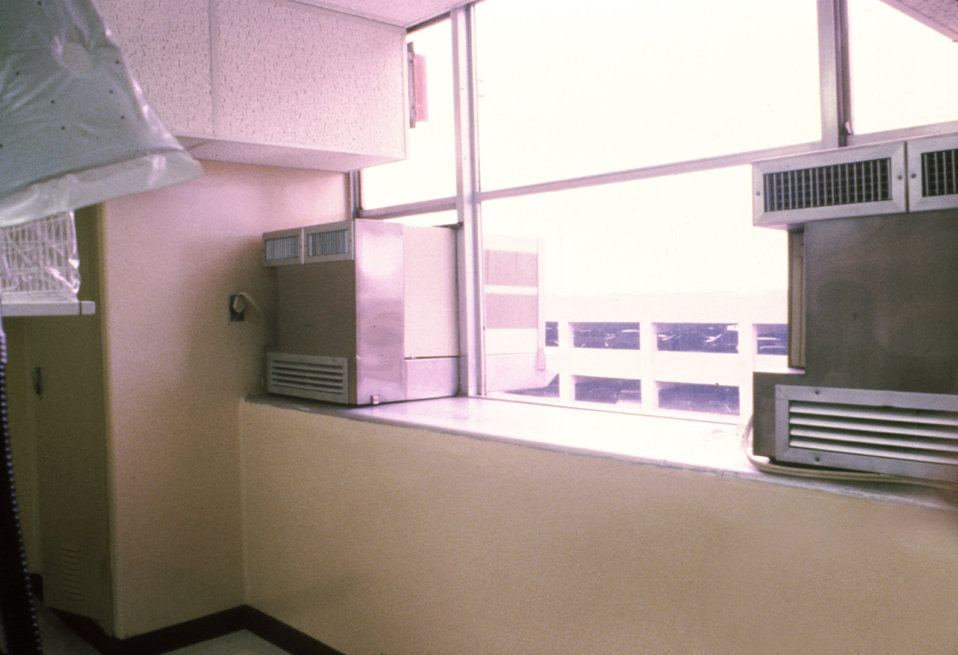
This 1980 photograph depicts the inside of a Vicker's isolation suite at Georgia Baptist Medical Center (now Atlanta Medical Center).